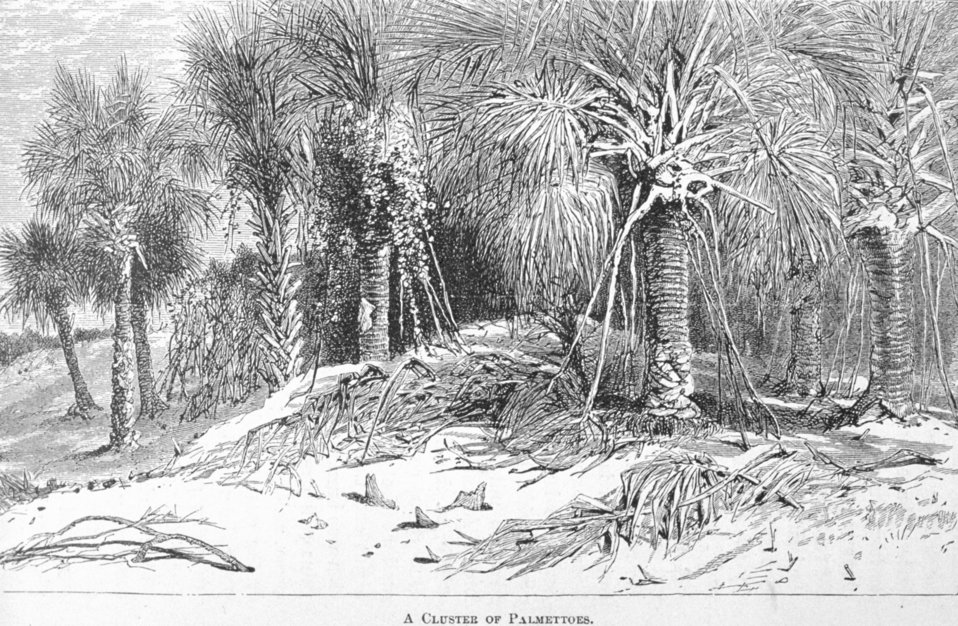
A Cluster of Palmettoes - in 'Florida for Tourists, Invalids, and Settlers' by George M. Barbour, 1881. Library Call No. F316 .B23 1881.